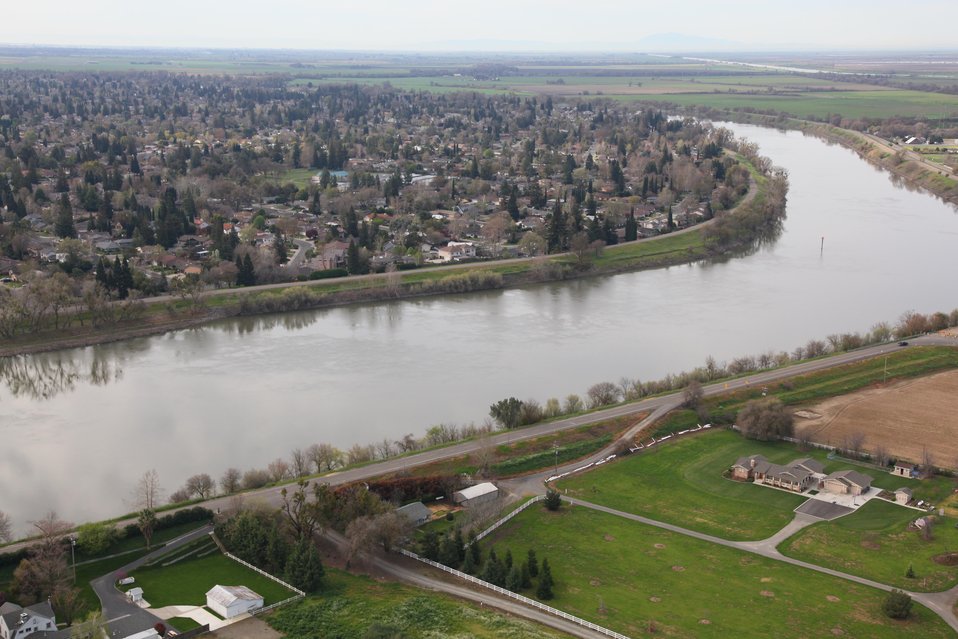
Sacramento River

An aerial view of the Sacramento River in Sacramento, Calif., shown March 17, 2010.